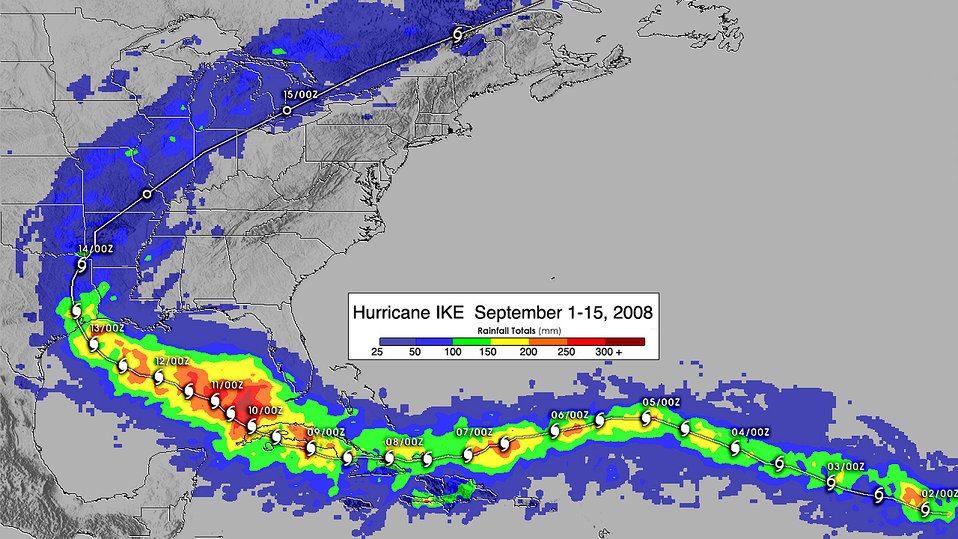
Sept. 18, 2008: NASA's TRMM Satellite Assesses Hurricane Ike's Rainfall